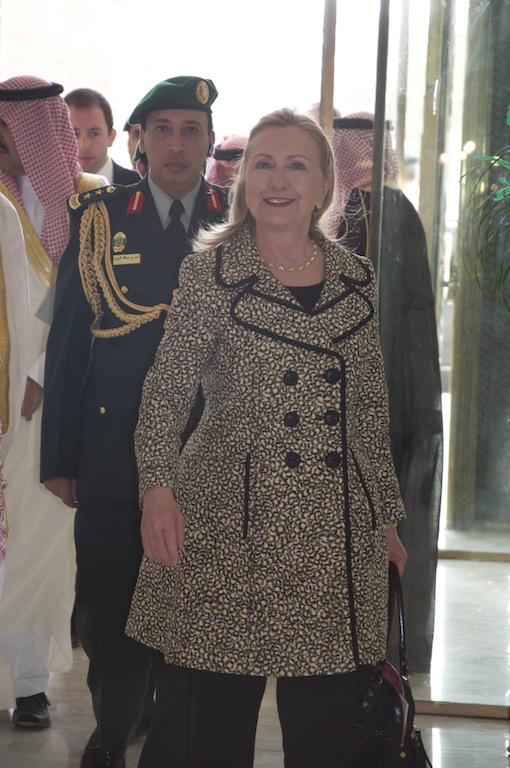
Secretary Clinton Enters the Saudi Ministry of Foreign Affairs

U.S. Secretary of State Hillary Rodham Clinton enters the Ministry of Foreign Affairs of Saudi Arabia in Riyadh on March 30, 2012.